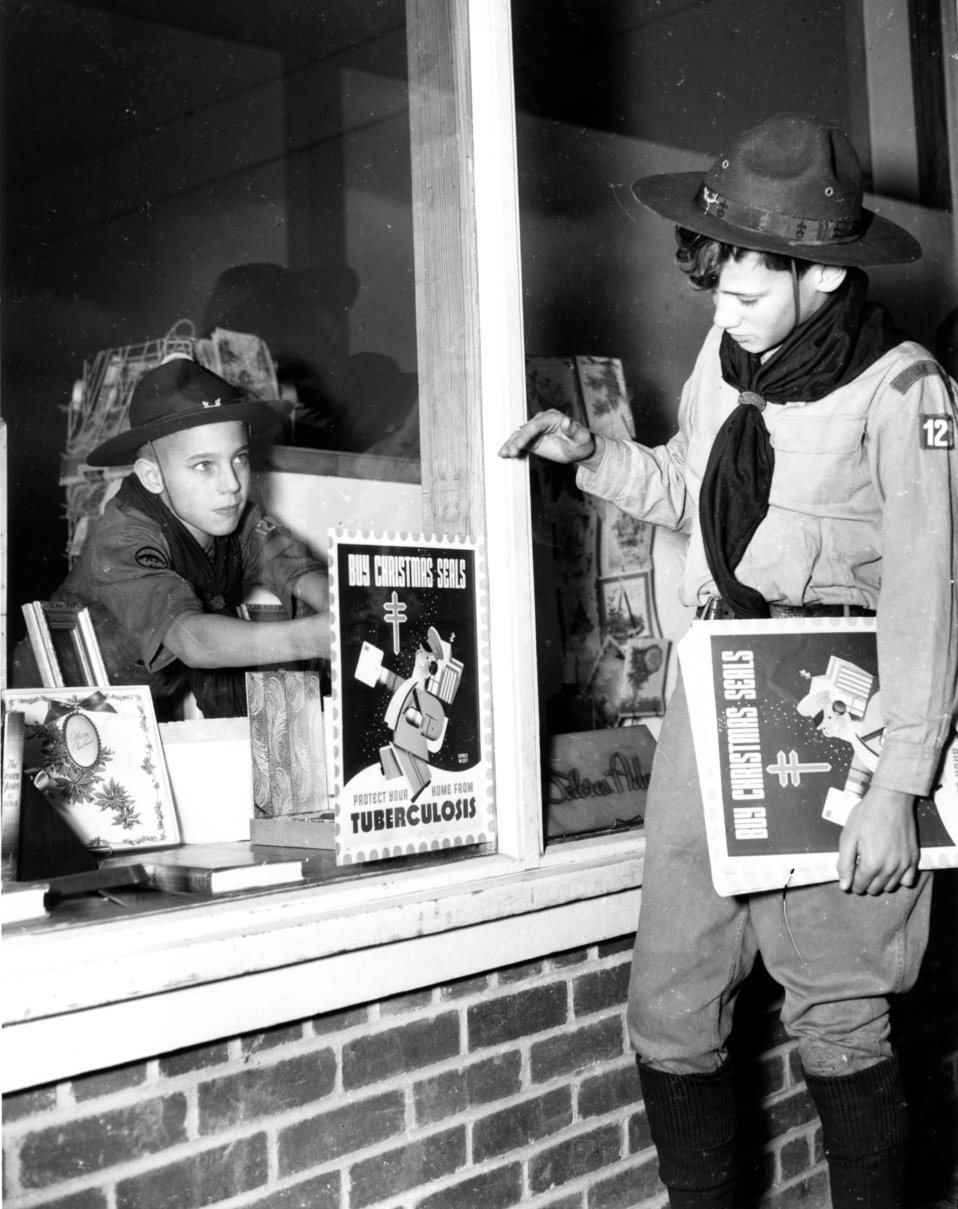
Daily Life at Oak Ridge